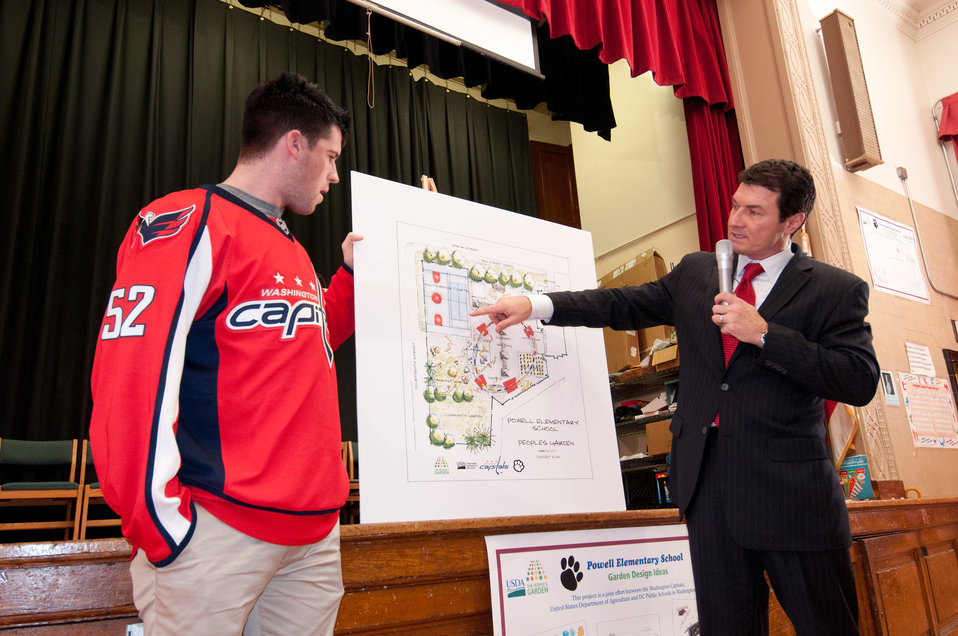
Washington Capitols Defenseman, Number: 52 Mike Green (left) and Comcast SportsNet Analyst Alan May of the The People’s Garden team for W. B. Powell Elementary School, (consisting of the Washington Capitols, U.S. Department of Agriculture and D.C. Public Schools in Washington, D.C.) revealed to 289 parents and students, the School Garden Design Concept on Thursday, March 10, 2011. The design draft was created by Forest Service landscape architect Matt Arnn, with the support of Natural Resources Conservation Service landscape architect Bob Sneickus, Outreach and Education Coordinator Annie Ceccarini and Project Manager Leslie Burks who worked with the Principal Janeece Docal and the school during an earlier visit to develop illustrated ideas from parents and students.